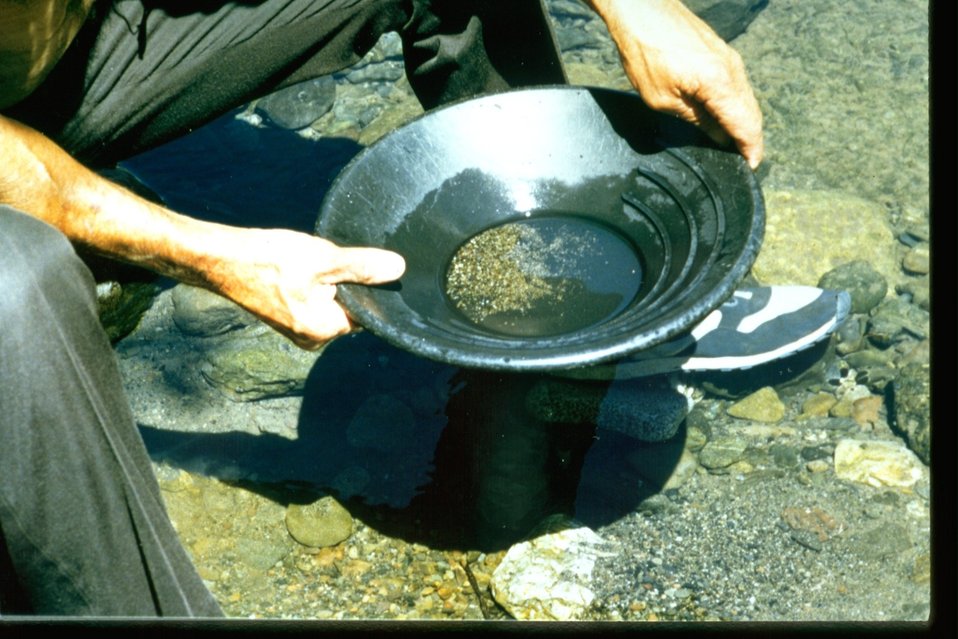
Gold panning at Sixes River.